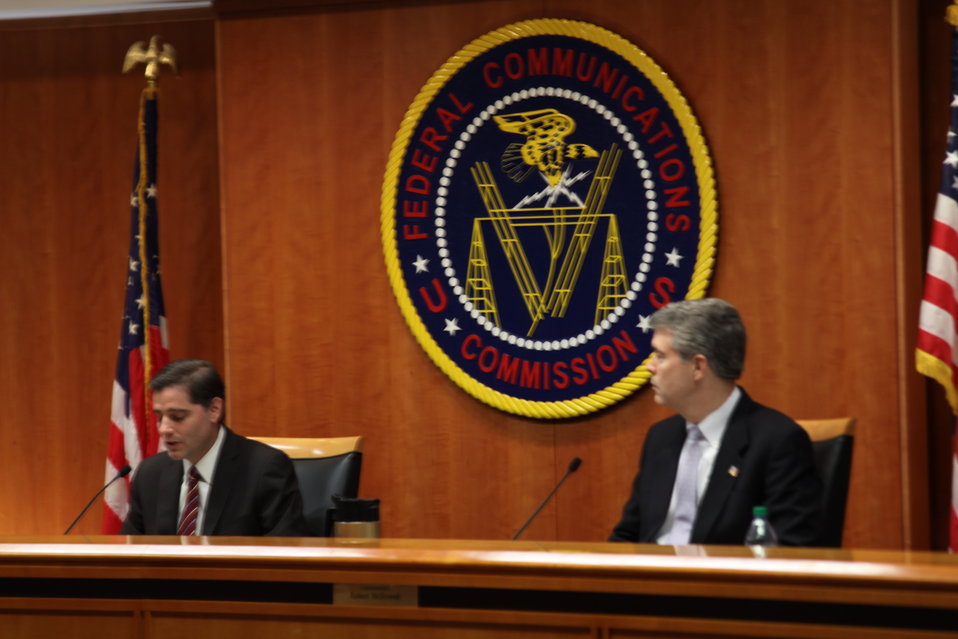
7/12/2011 Open Commission Meeting

Chairman Julius Genachowski and Commissioner Robert M. McDowell at the July 2011 Open Commission Meeting on Low Power Radio Service, Cramming, and Wireless E911 Location Information